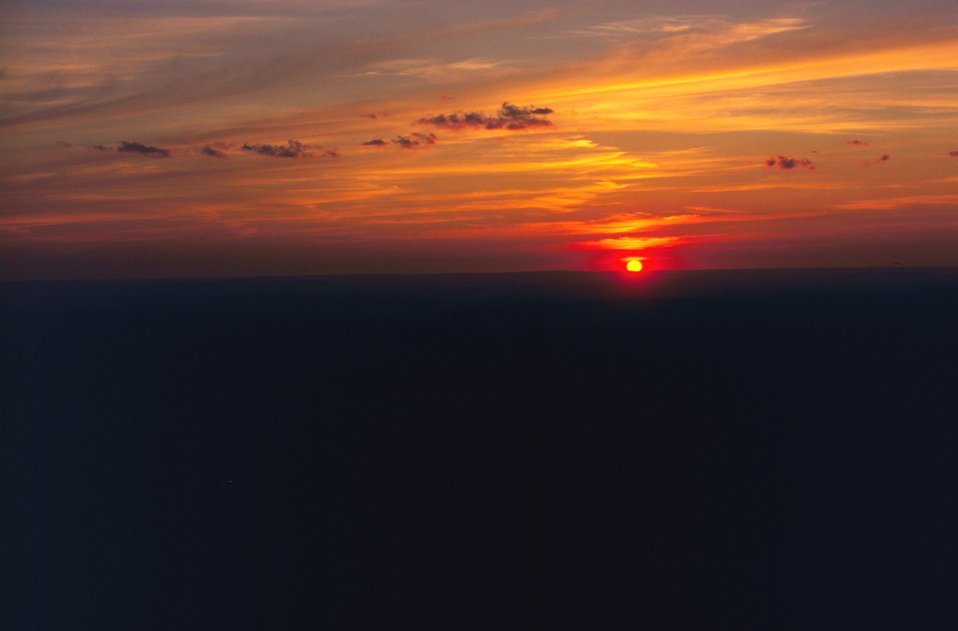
Lightkeeper's sunset - somewhere in America.